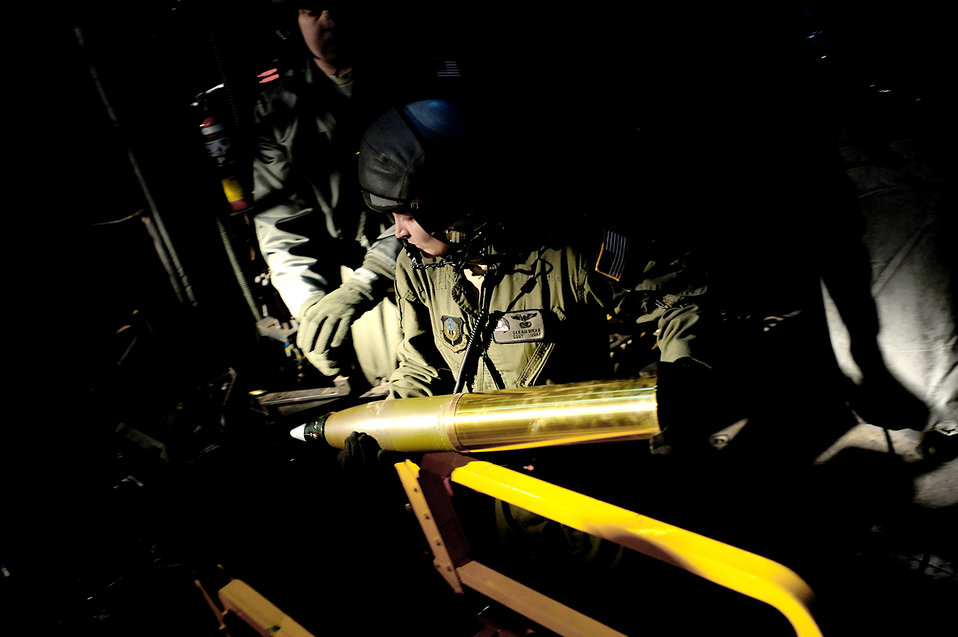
'Spooky' training

Staff Sgt. Sarah Mrak loads a 105mm gun aboard an AC-130U Spooky during a training mission Feb. 3, 2011, at Hurlburt Field, Fla. Sergeant Mrak is an AC-130U aerial gunner assigned to the 4th Special Operations Squadron.